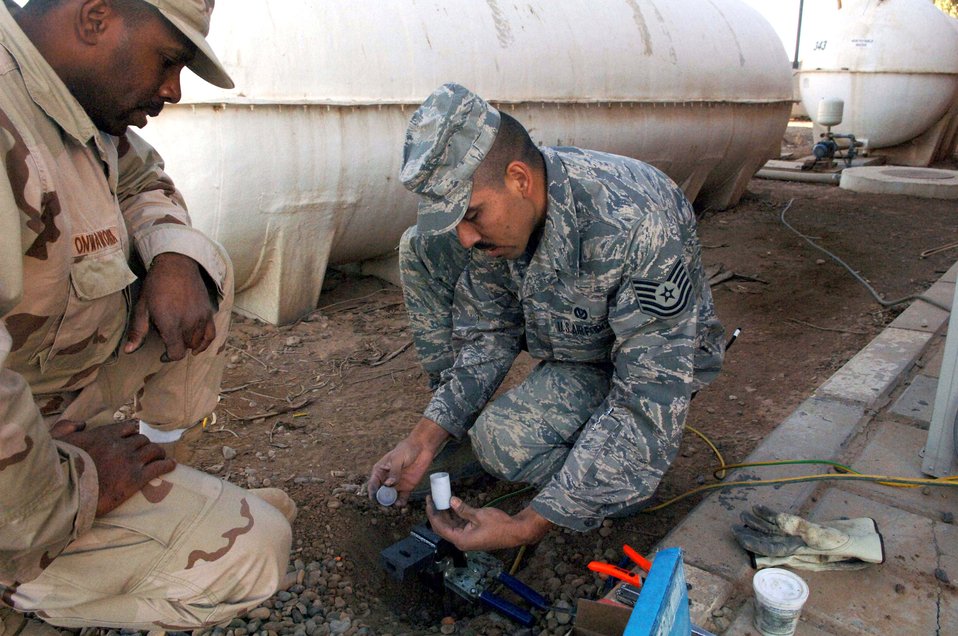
Let there be fire

Staff Sgt. Eduardo Onwawoma watches Dec. 11 as Tech. Sgt. Victor Magana pours welding powder into an exothermic welder while working at Balad Air Base, Iraq. The welder will be used to fuse two pieces of ground wire to a grounding rod, preventing static electricity from damaging nearby communitcaion lines. Sergeants Onwawoma and Magana are electricians with the 332nd Expeditionary Civil Engineer Squadron. Sergeant Magana is deployed from Barksdale Air Force Base, La., and Sergeant Onwawoma is deployed from Yokota Air Base, Japan.